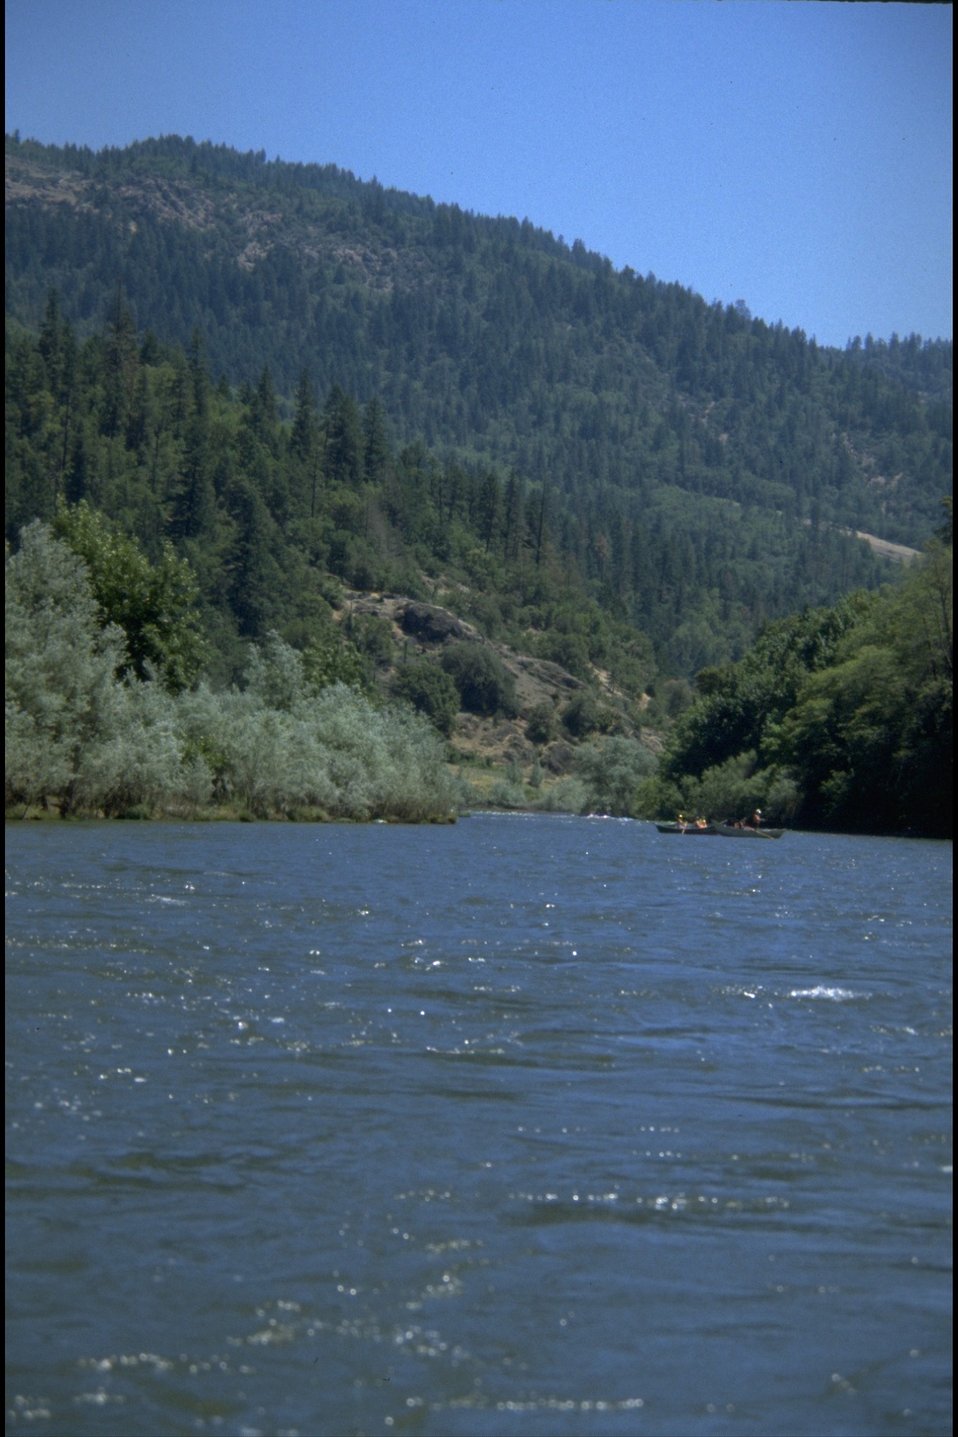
Anglers in a drift boat on the Hellgate Recreation area.